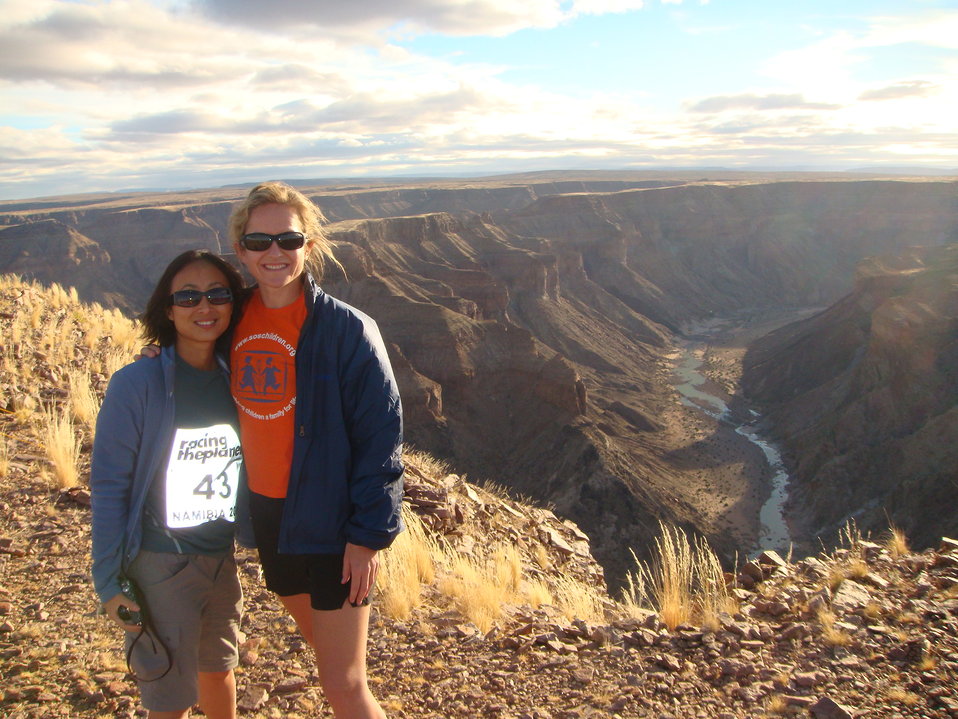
Picture of competitors (including my daughter Nicola Ogilvie) at the beginning of the 250km Racingtheplanet 2009 race in Namibia. The picture is taken on the rim of the Fish River Canyon. Picture owned by my daughter/myself. Duncanogi (talk) 09:36, 20 July 2009 (UTC)